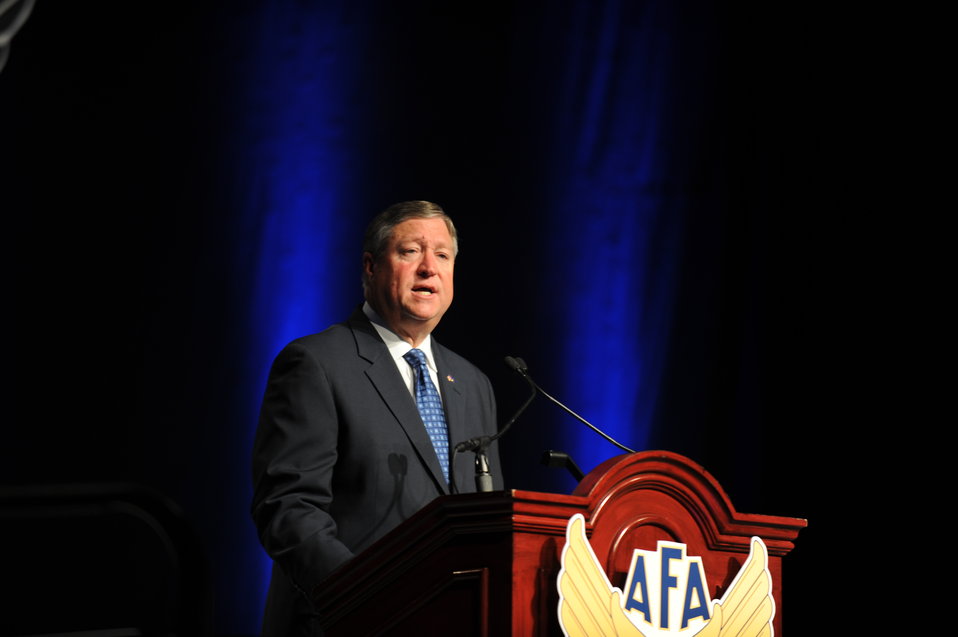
SECAF address state of the Air Force

Secretary of the Air Force Michael Donley addresses Airmen, sister service members and industry partners Sept. 19, 2011, about the state of the Air Force during the Air Force Association’s 2011 Air & Space Conference and Technology Exposition at National Harbor, Md. Donley explained how the Air Force will seek to maintain key air power capabilities in an austere budget environment.